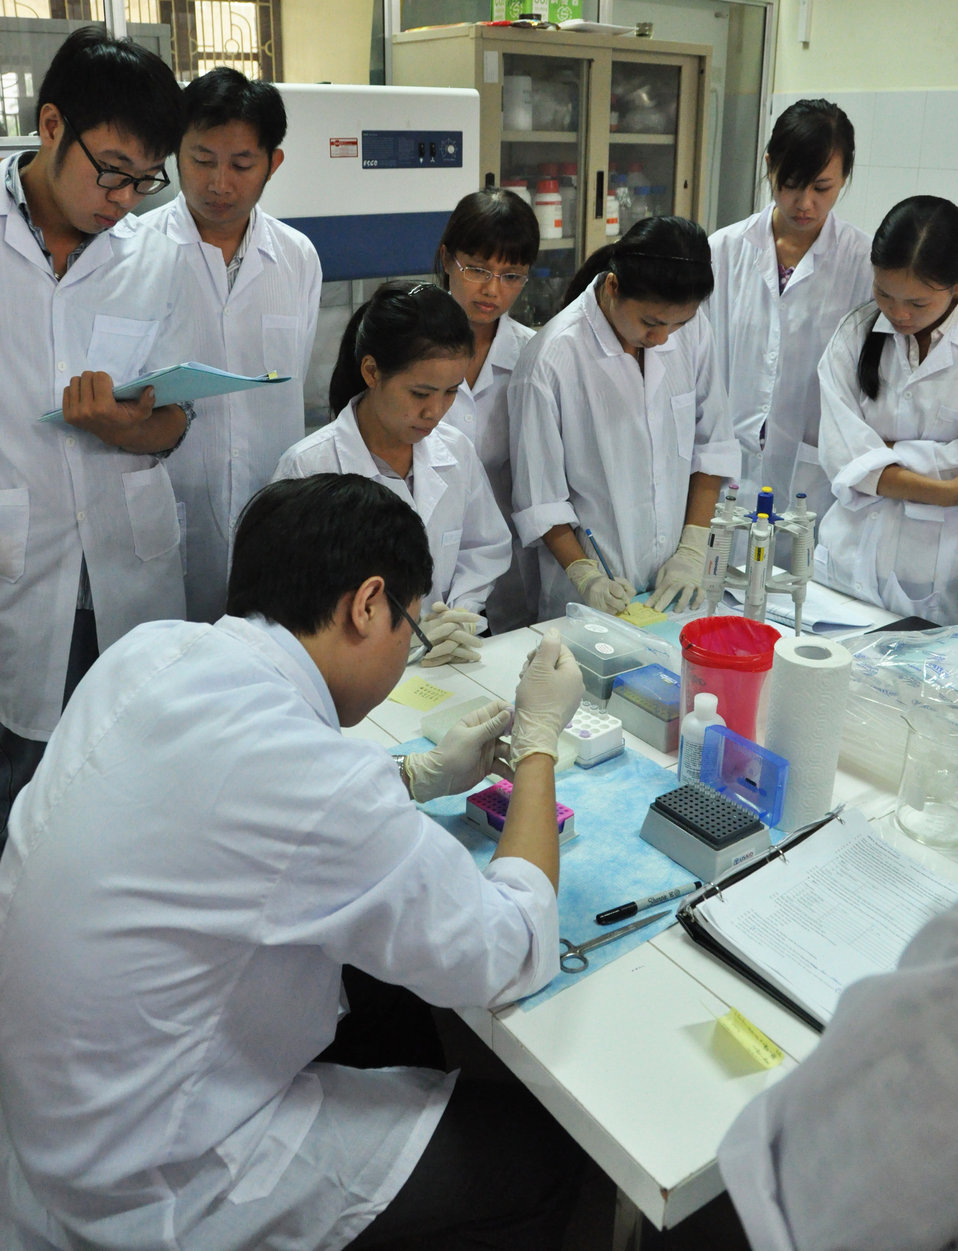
Animal virus detection lab training in Hanoi

Trainee learns how to detect viruses in Hanoi under a USAID program.